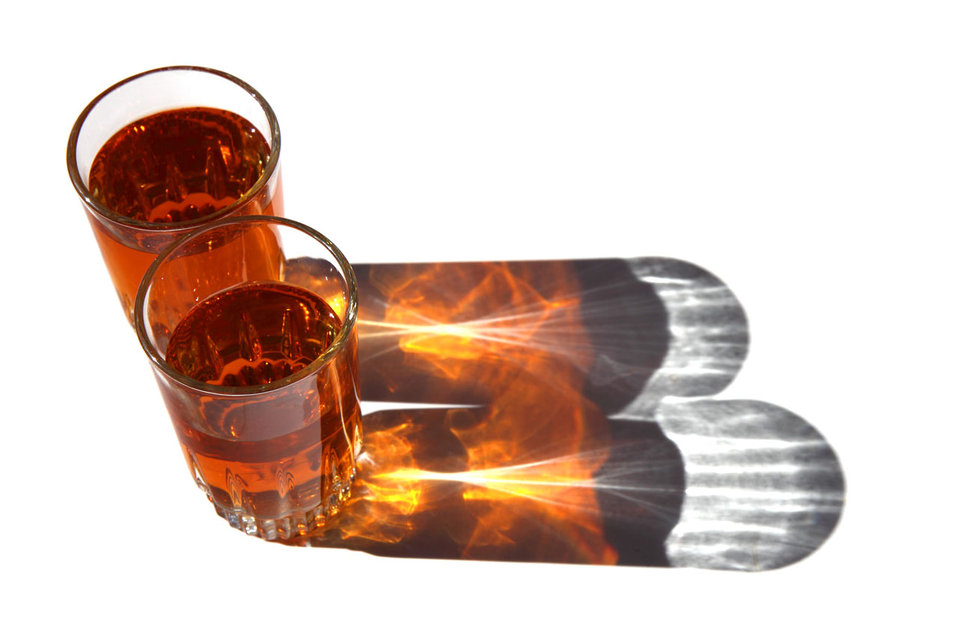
Ice tea in two glasses with colorful shade.